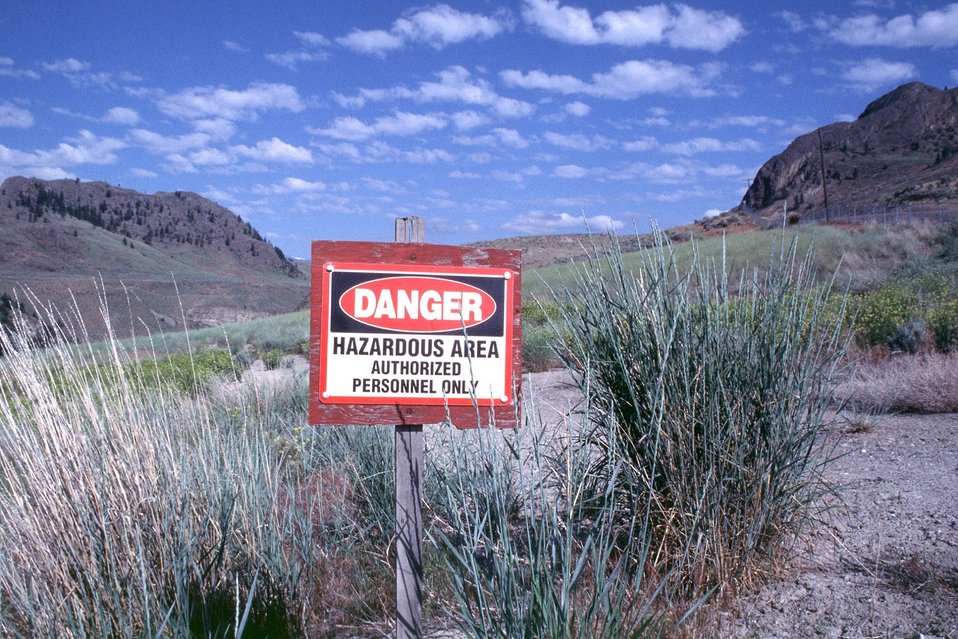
Landfill Rehab, Orville, Washington.